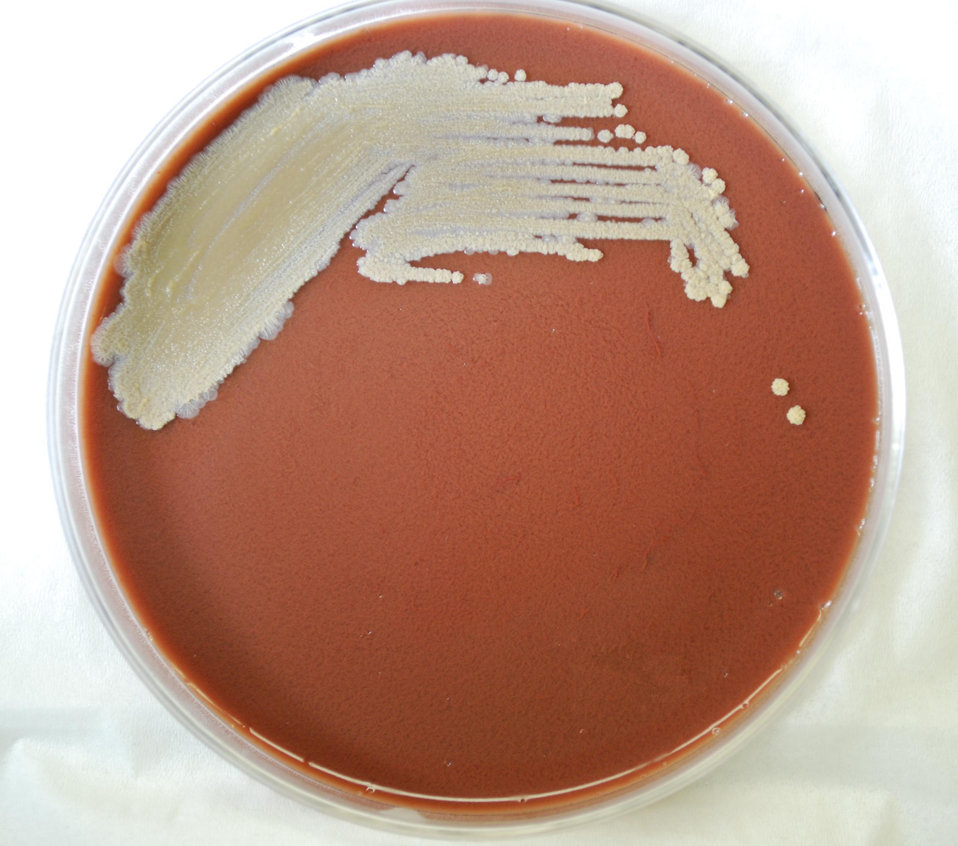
This photograph depicts the colonial morphology displayed by Gram-negative Burkholderia pseudomallei bacteria, which was grown on a medium of chocolate agar, for a 48 hour time period, at a temperature of 37�C. For a closer view of these bacterial colonies, see PHIL 12236.How is melioidosis transmitted and who can get it?